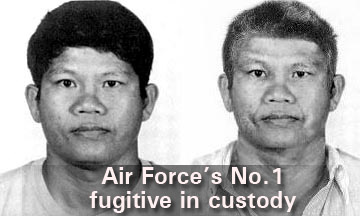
U.S. Air Force's top fugitive in custody

Saner Wonggoun is shown in 1994 at left, and in an age-progression image that led to the capture of the fugitive. The former U.S. Air Force sergeant was assigned to Travis Air Force Base, Calif. He fled the country in January 1994 when authorities in Marin County, Calif., wanted to question him in the murder investigation of his wife and unborn child.